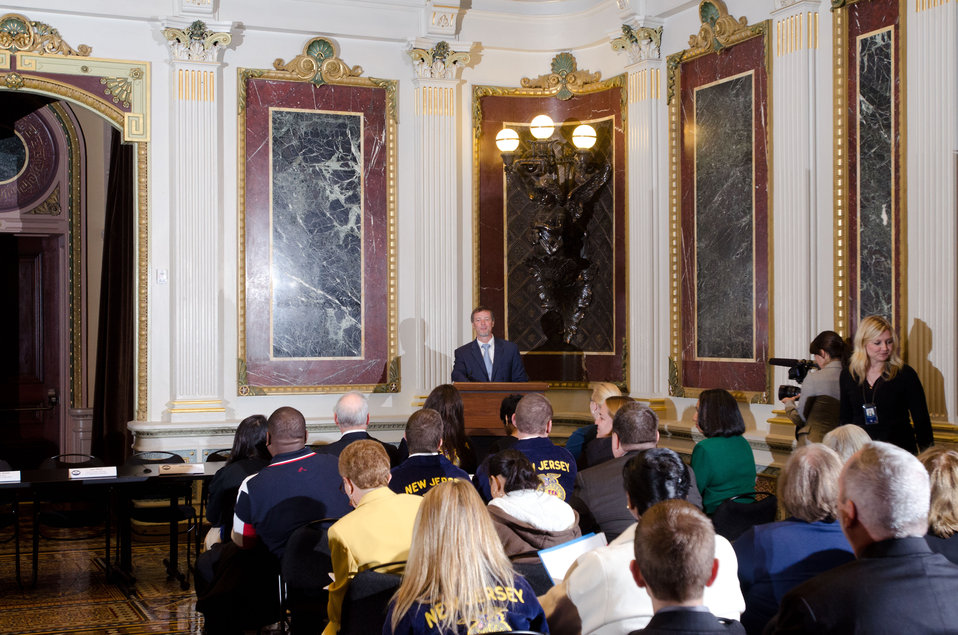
White House Domestic Policy Council Rural Affairs Senior Policy Advisor Doug McKalip hosts the Champions of Change event that recognized 12 individuals, members of FFA and 4-H; and six educators/mentors, at the Executive Office Building in Washington, D.C. on Tuesday, Oct. 9, 2012. The Champions of Change program was created to honor ordinary Americans doing great work in their communities. Each week, a different sector is highlighted and groups of Champions, ranging from educators to entrepreneurs to community leaders, are recognized for the work they are doing to serve and strengthen their communities.